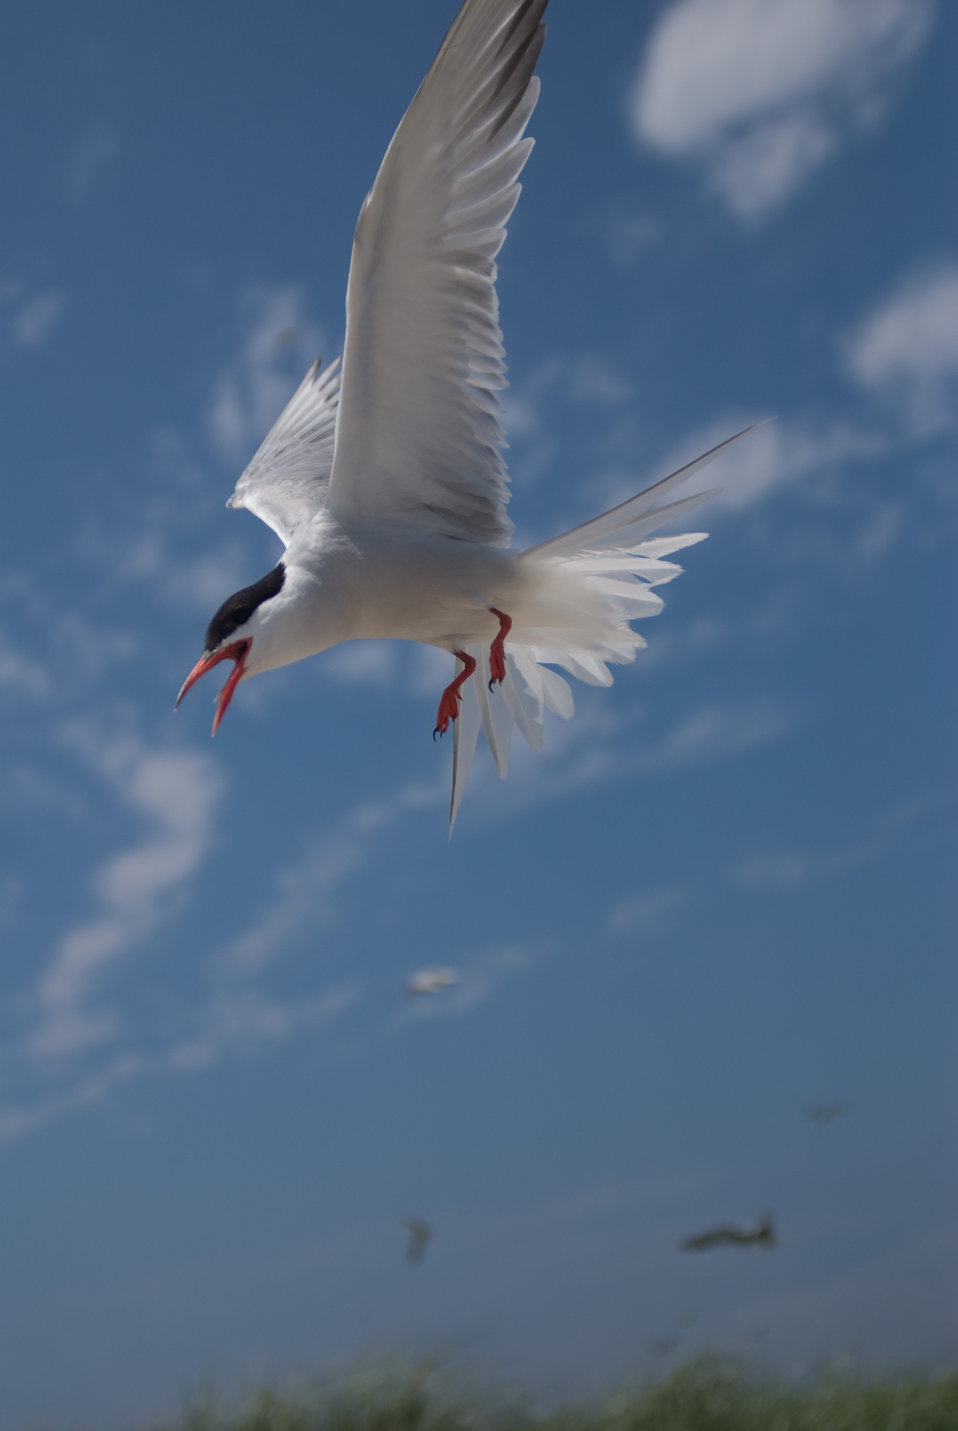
Tern

Monomoy National Wildlife Refuge.